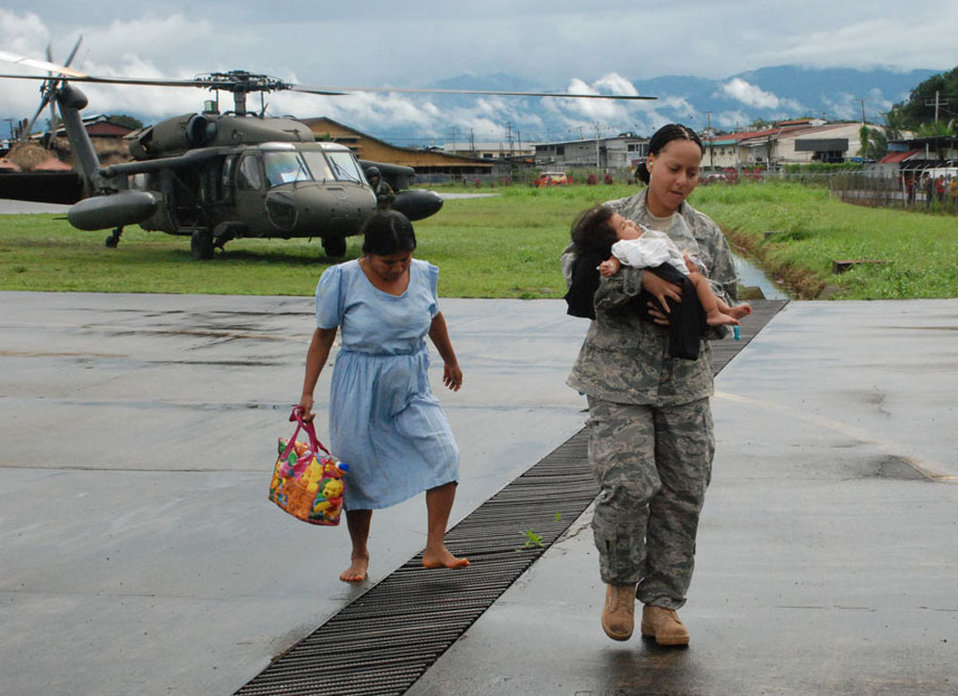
U.S. troops help flood victims in Central America

Tech. Sgt. Tracy Fletcher carries a 7-month-old baby from a UH-60 Black Hawk helicopter to an ambulance Nov. 27 at Changuinola, Panama. The baby, suffering from severe dehydration, was transported to a local hospital. Servicemembers from Joint Task Force-Bravo are here in support of a request from the Panamanian government for assistance with recent flooding caused by prolonged heavy rains in the country. Sergeant Fletcher is a JTF-Bravo emergency medical technician.